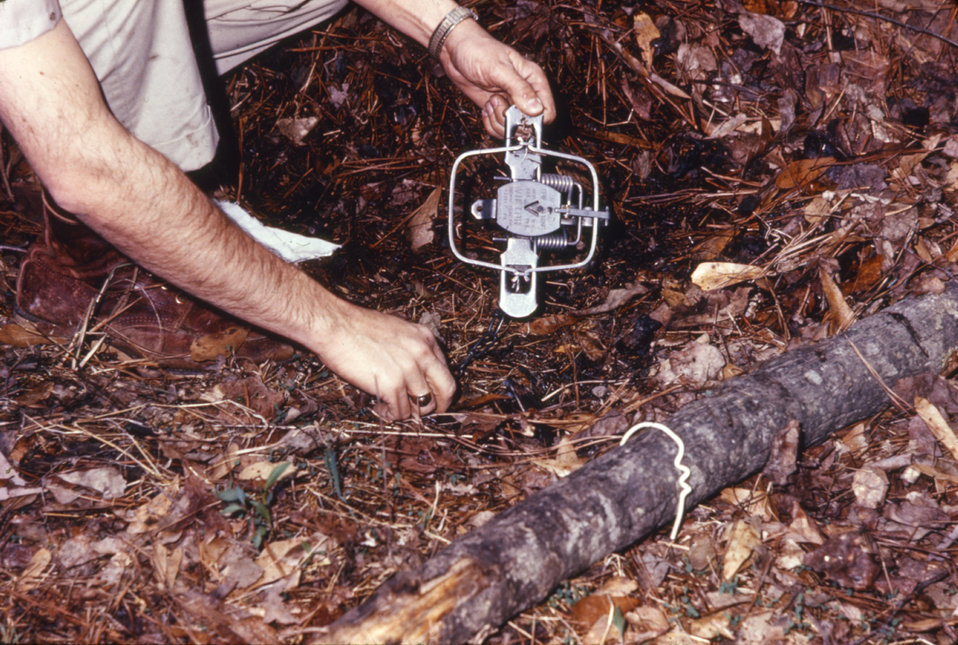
This photograph shows an individual setting up a steel trap during an arboviral field study.